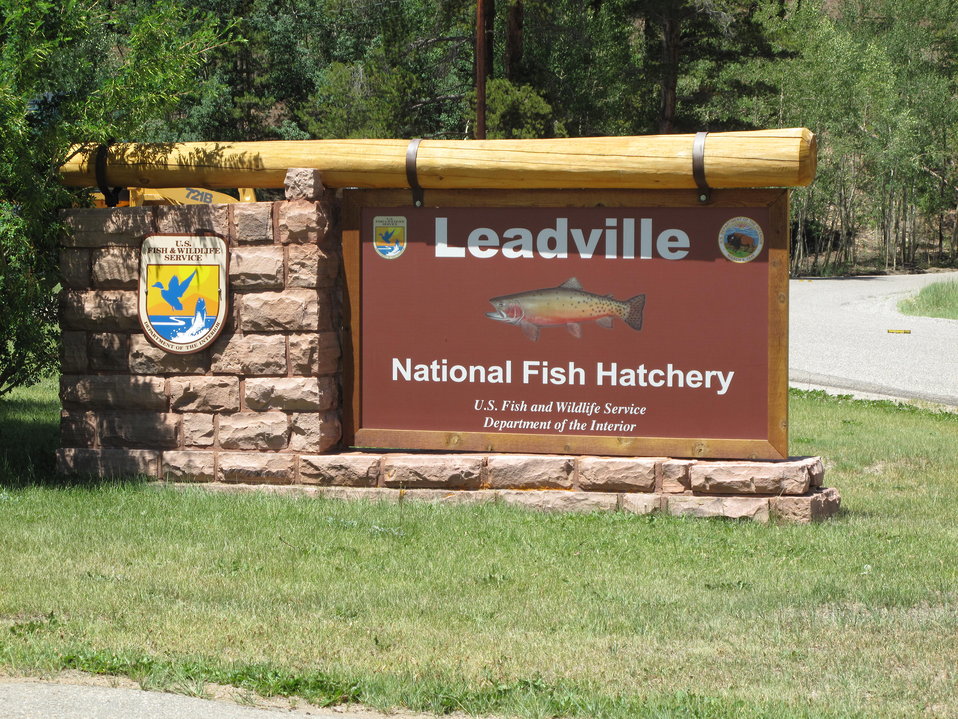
Leadville National Fish Hatchery Entrance Sign

The Leadville National Fish Hatchery was established in 1889. It is the second oldest Federallly-operated fish hatchery in existence today.